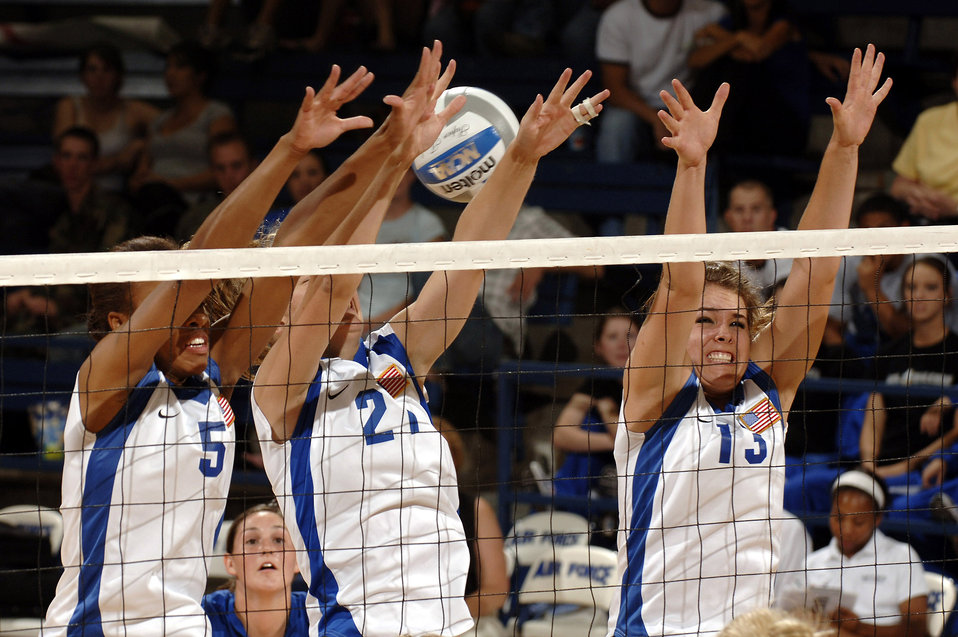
Hands up

U.S. Air Force Academy sophomores Jocelyn Booker (from left) and Michelle Harrington and freshman Caroline Kurtz block in unison against Chicago State Aug. 24 at Clune Arena at the Academy in Colorado. The Falcons were runners-up in the Air Force Invitational Tournament.